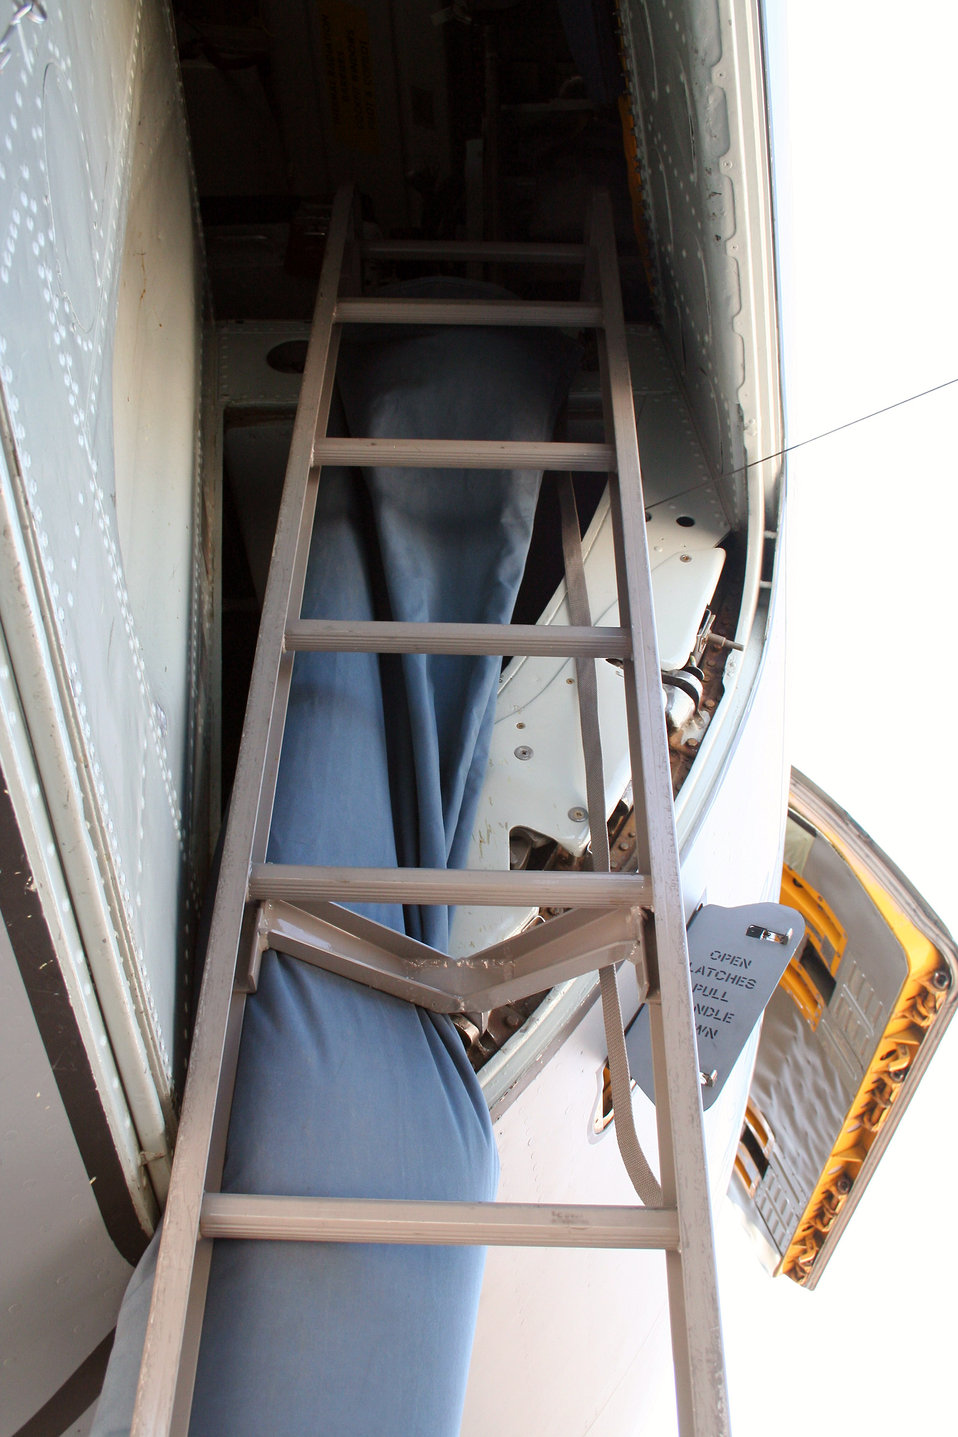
KC-135 flight deck cool-down

A fabricated cooling sock is attached behind the crew entry ladder of a KC-135 Stratotanker to allow cooling air onto the flight deck when the tanker is parked on a ramp in a very hot climate. The cooling sock demonstrated an Air Mobility Battlelab KC-135 Hot Weather Cooling Sock initiative. The use of the cooling sock has been recommended for fielding to Air Mobility Command officials by the battlelab staff, which is located at the U.S. Air Force Expeditionary Center on Fort Dix, N.J.